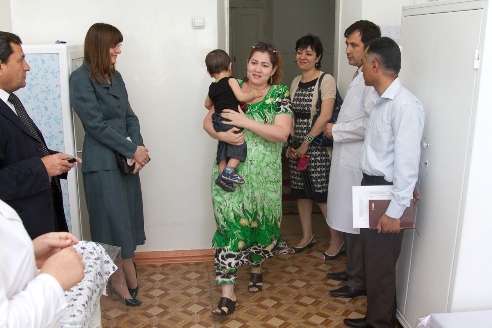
A Tajik Brings Her Child Into a Health Clinic

A Tajik woman brings her child into a health clinic funded by USAID in Dushanbe, Tajikistan, on May 23, 2011. USAID is supporting a national polio vaccination campaign aimed at preventing future outbreaks of the disease.